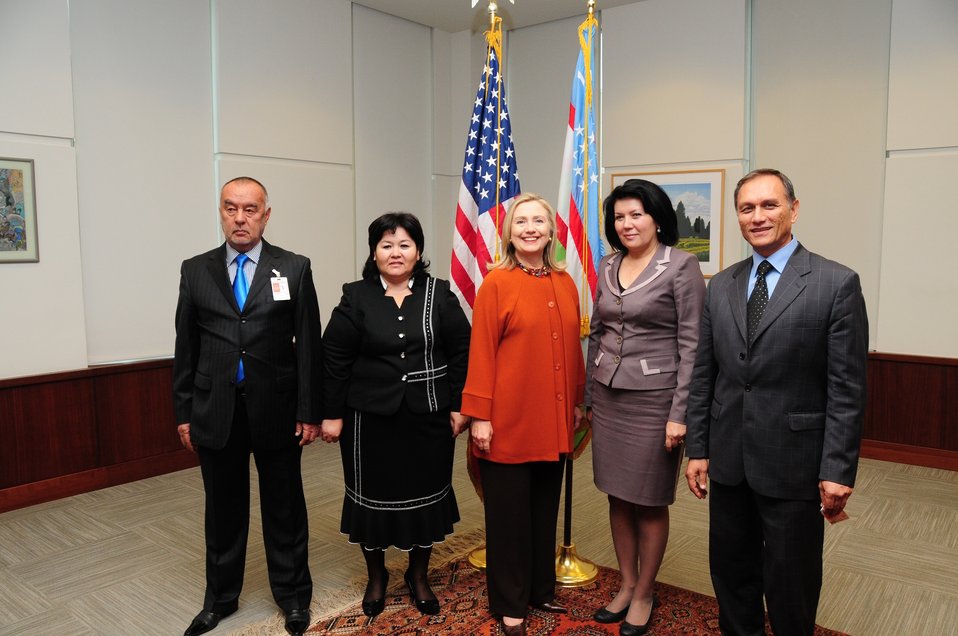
Secretary Clinton Meets With Uzbek Civil Society Organization Members

U.S. Secretary of State Hillary Rodham Clinton meets with members of Uzbek civil society organizations in Tashkent, Uzbekistan, on October 23, 2011.